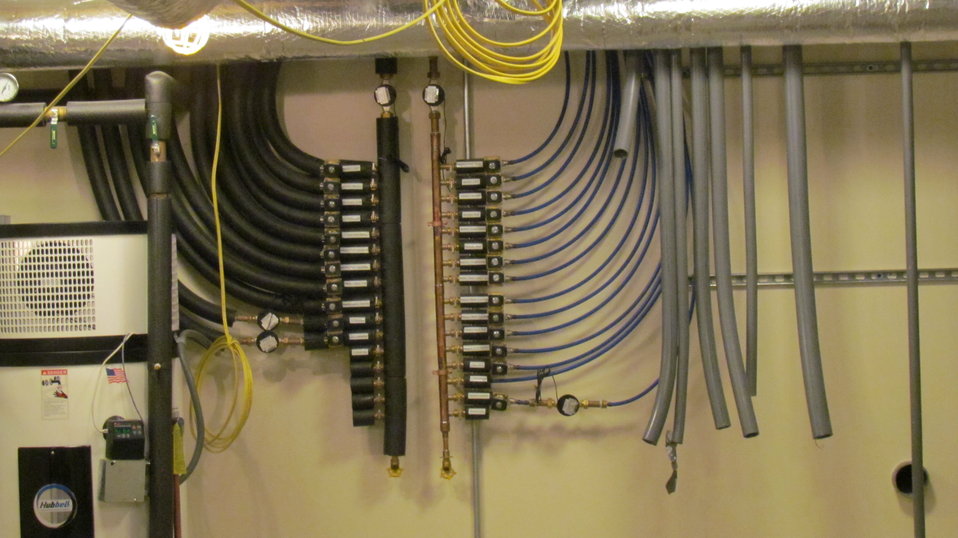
Close up of water distribution system in facility. The black solenoid control valves are computer controlled and used to replicate the cold water usage for a typical family of four.